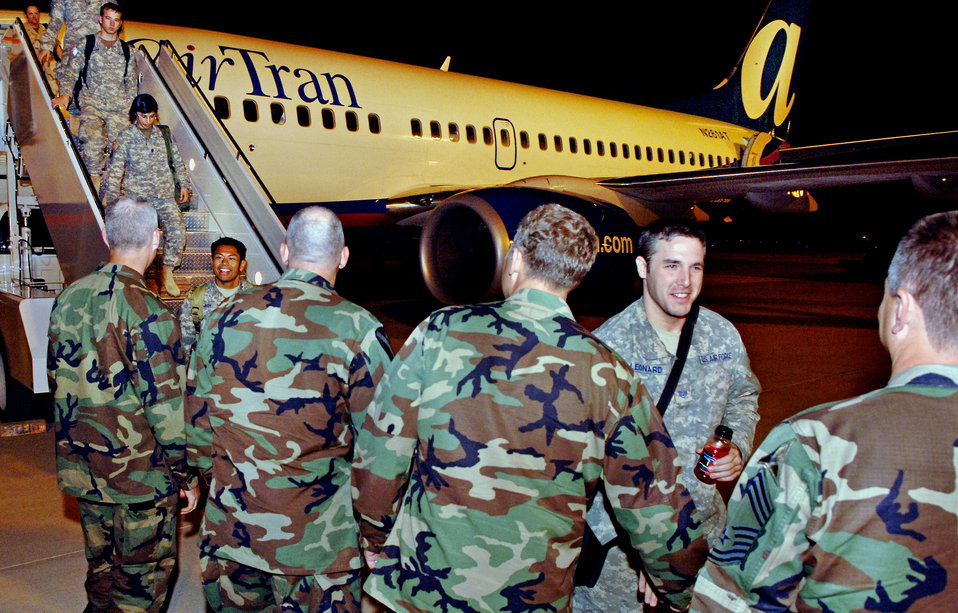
Airmen deployed with Army return home

Airmen from the 3rd Air Support Operations Group return home to their North Central Texas post June 5 following a six-month deployment to Iraq. Nearly 90 Airmen from Fort Hood and Fort Carson, Colo., provided Army combat brigades with close-air support and overwatch during critical maneuvers for such units as the 1st Cavalry, 3rd Infantry, and 25th Infantry divisions, along with special operations forces. The battlefield Airmen from Fort Hood are tactical air control party and joint terminal attack controllers who provide a direct link between combat commanders on the ground and the pilots who provide close air and bombing support.